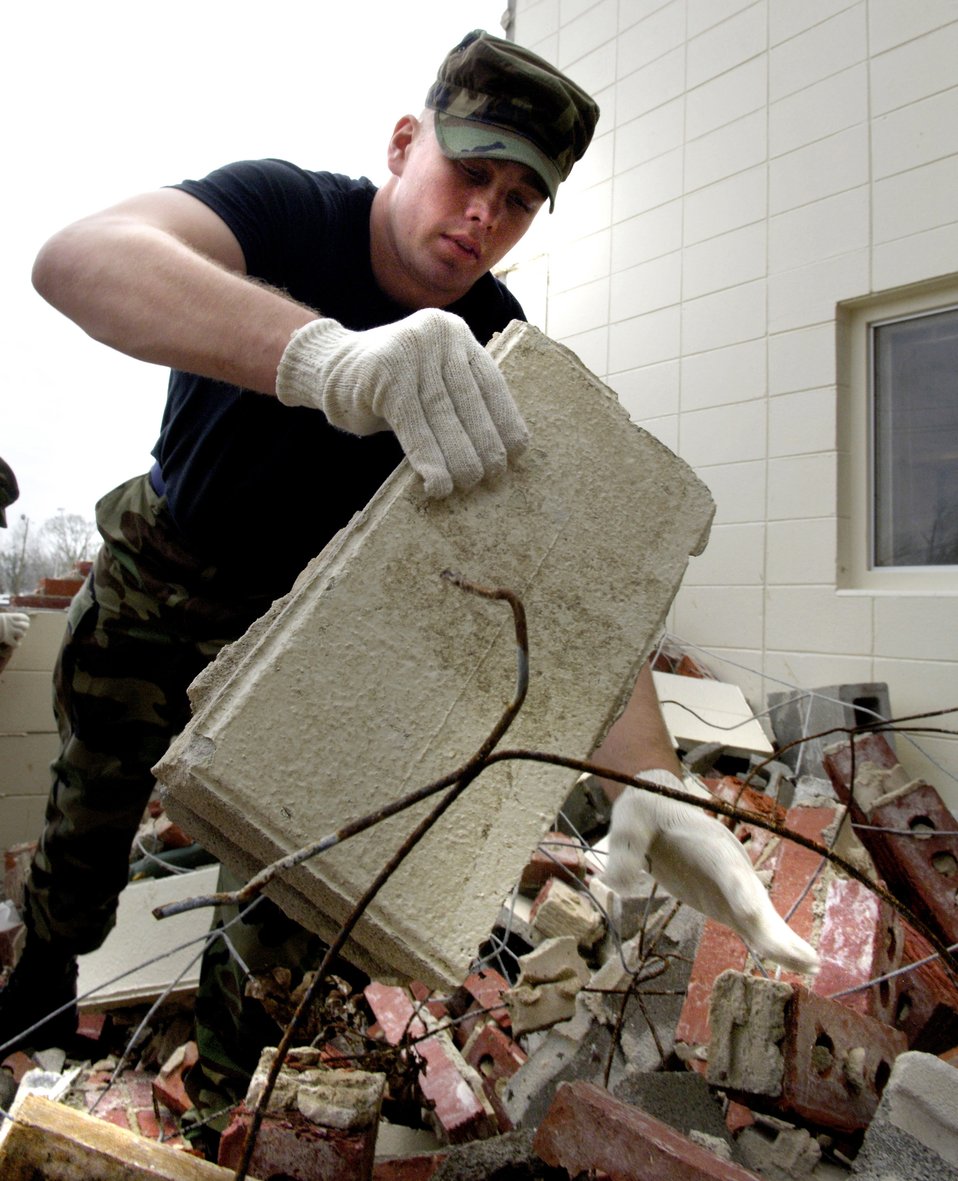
Keesler Airmen answer call for help

Airman Michael Kearny clears debris from a site designated to be a new Salvation Army center in Gulfport, Miss. Airmen from Keesler Air Force Base, Miss., have logged more than 38,000 volunteer hours since Hurricane Katrina. Airman Kearny is a ground radar technician trainee with the 338th Training Squadron at Keesler AFB.